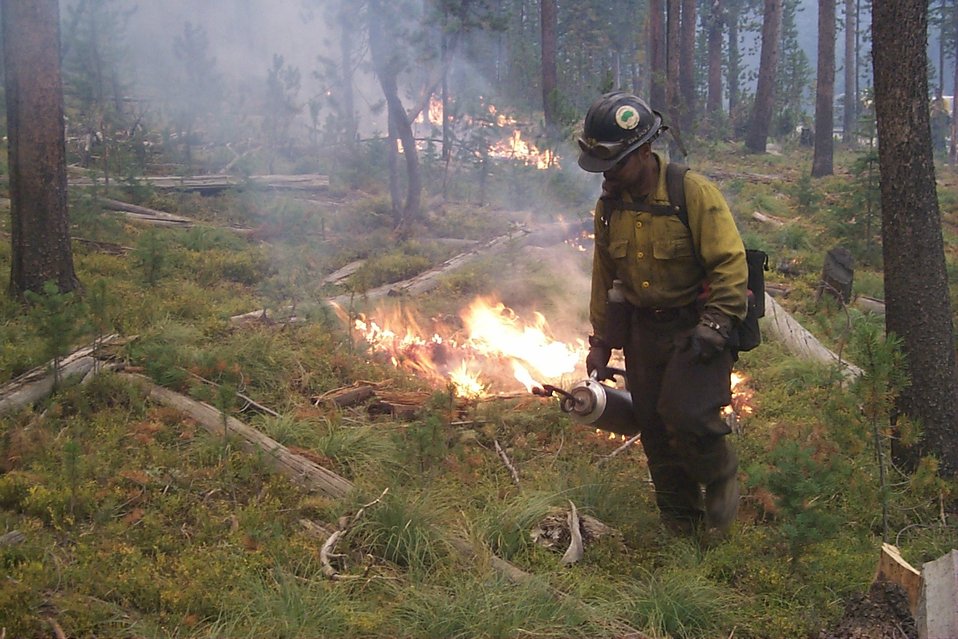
Controlled burn Fire Clearwater Fire Salmon Field Office USRD Upper Snake River District